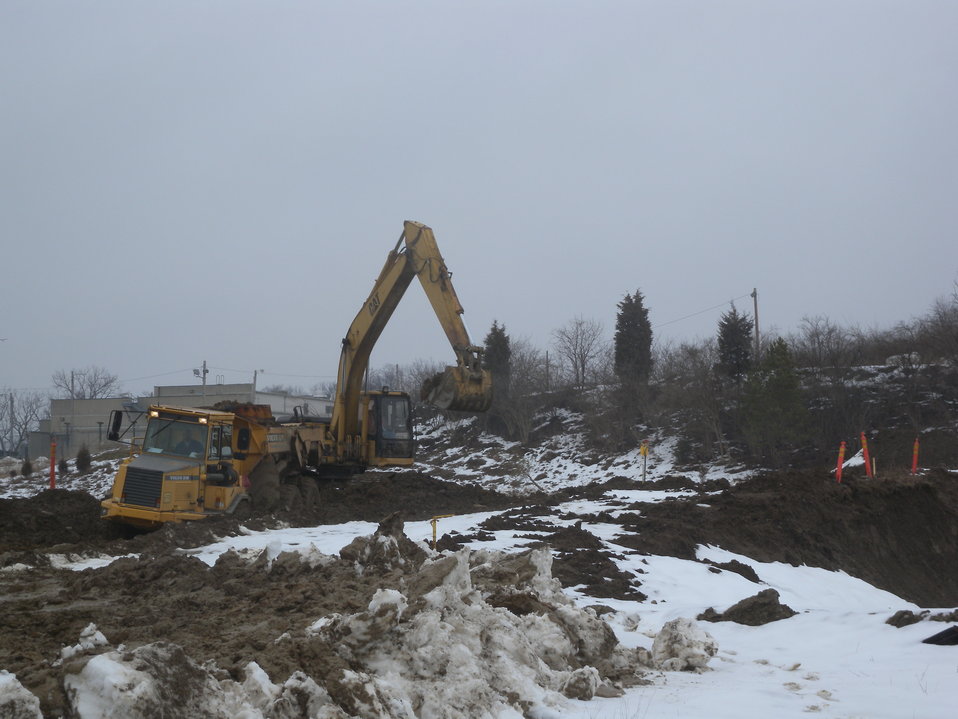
Recovery Act Project Brings End to Mound Site Cleanup Activities

The Recovery Act invested $17.9 million in the completion of EM’s legacy cleanup activities at the Mound Site in 2010.
Recovery Act workers disposed nearly 20,000 cubic meters of soil and demolition debris in the cleanup, which focused on the Operable Unit-1, a former mixed-waste landfill at the 306-acre site. The Recovery Act cleanup was the final remediation project at Mound.
The federal government is in the process of transferring ownership of the site to the Mound Development Corporation, a community reuse organization.